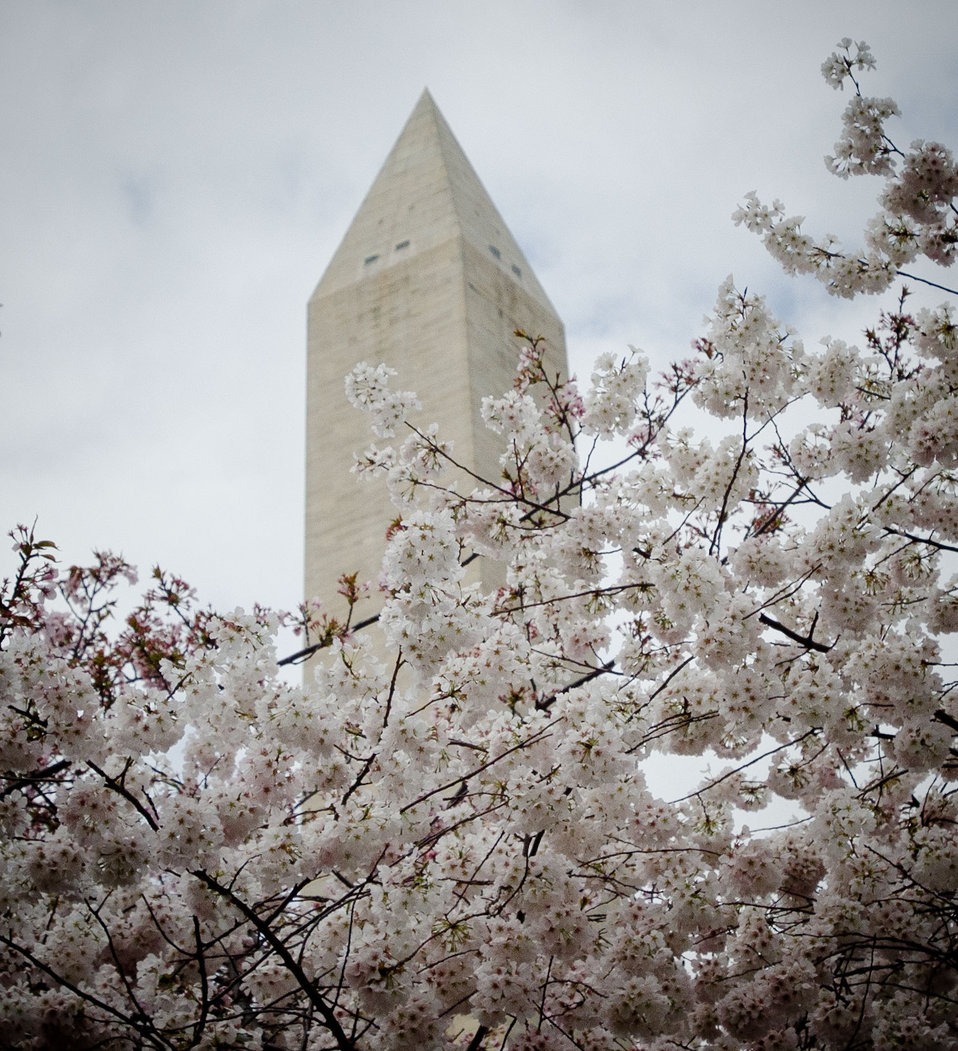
Washington Monument surrounded by Cherry blossoms in Washington, D.C., on Tuesday, March 20, 2012.